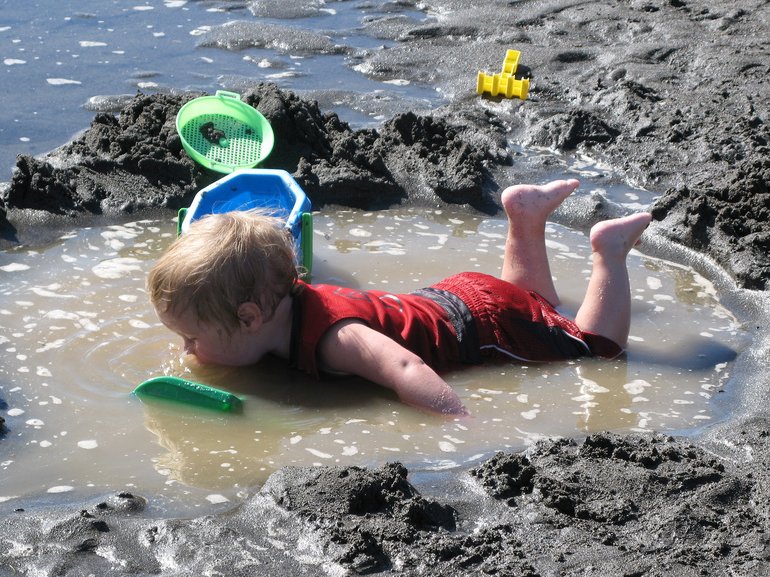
Beach

Uploaded for Flickr member Kelli Jones.